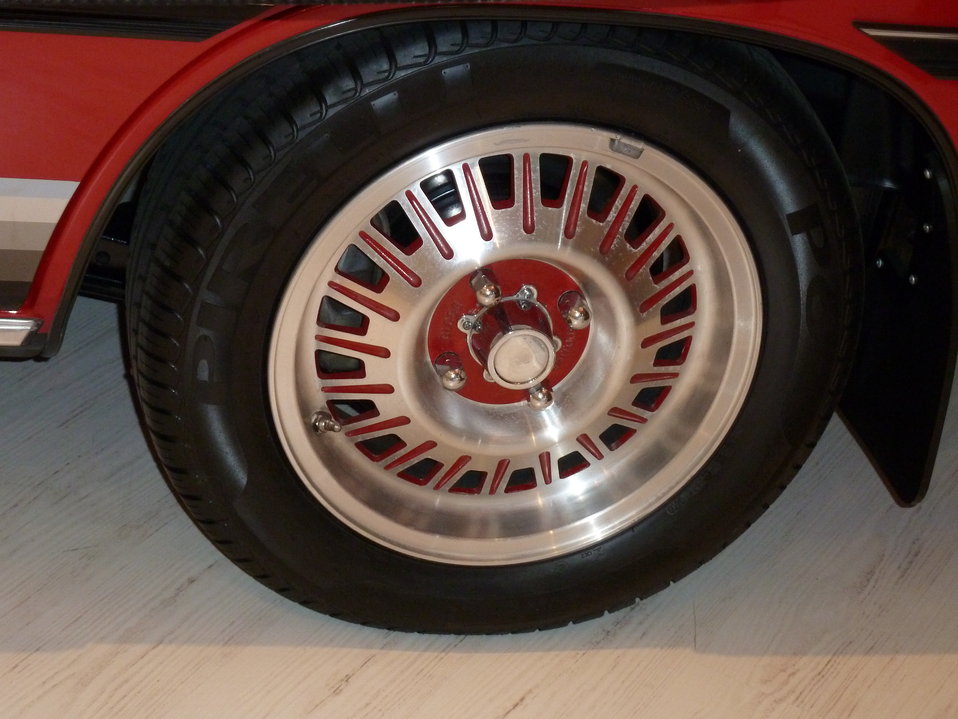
1981 Mitsubishi Sigma (GH) GLX Peter Wherrett sedan, photographed at the 2010 Australian International Motor Show, Darling Harbour, New South Wales, Australia.